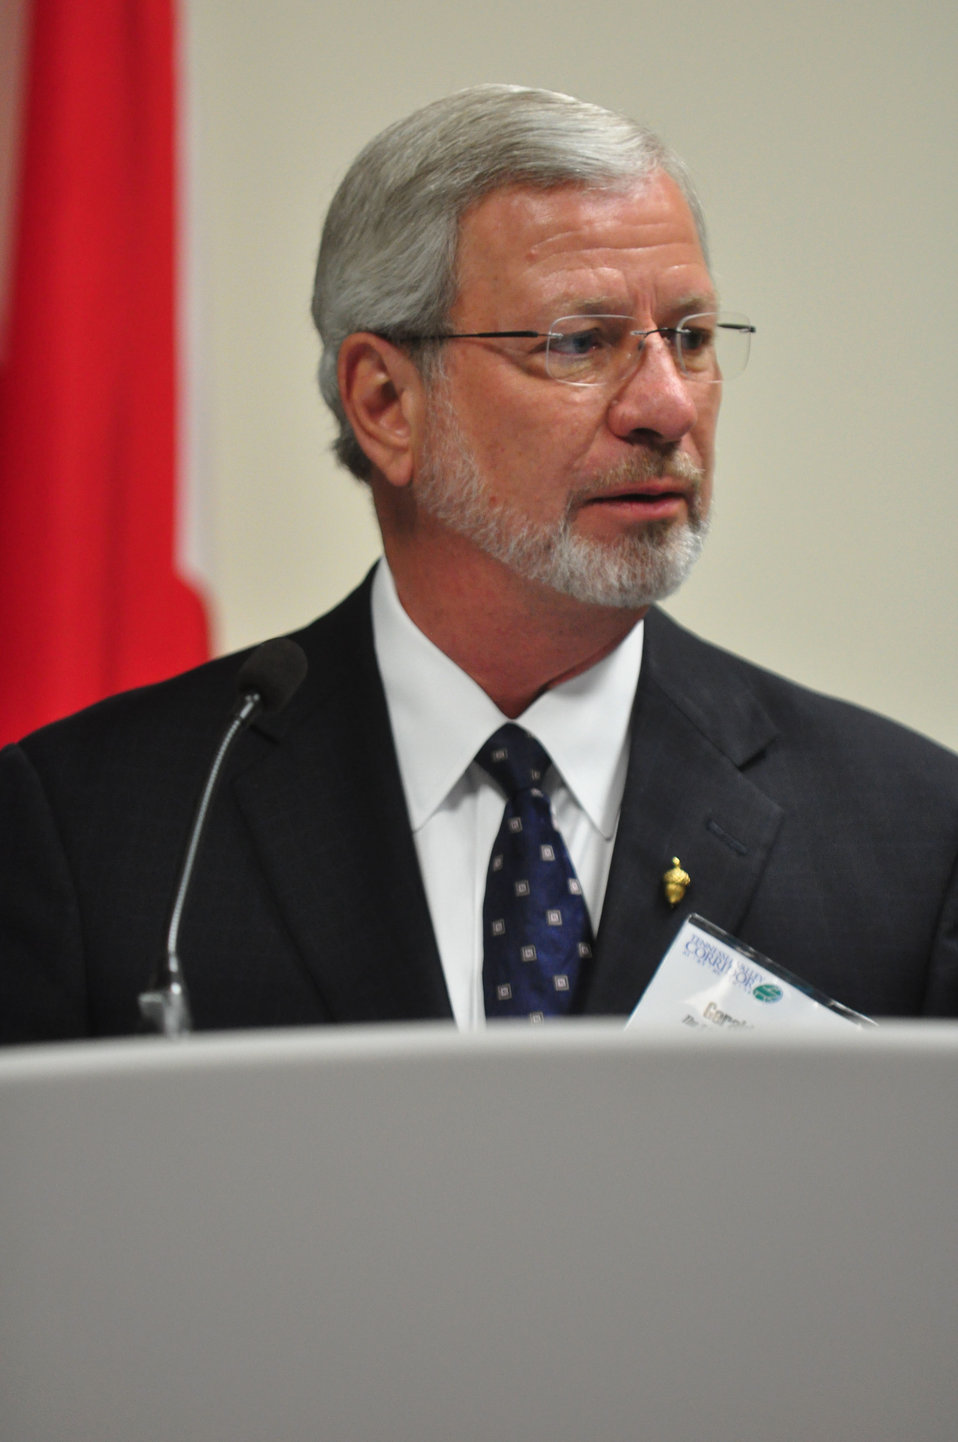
Tennessee Valley Corridor Summit Oak Ridge

13-062 DOE photo Lynn Freeny 5-29-2013 Oak Ridge Tennessee